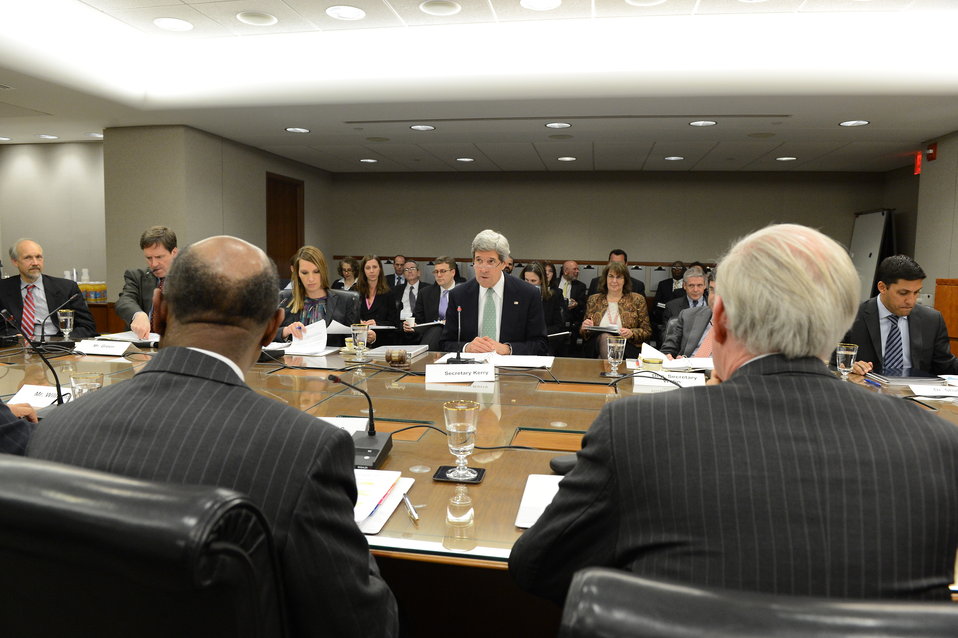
Secretary Kerry Hosts the Quarterly Millennium Challenge Corporation Board of Directors Meeting

U.S. Secretary of State John Kerry hosts and chairs the Quarterly Millennium Challenge Corporation (MCC) Board of Directors meeting at the U.S. Department of State in Washington, D.C., on March 14, 2013.